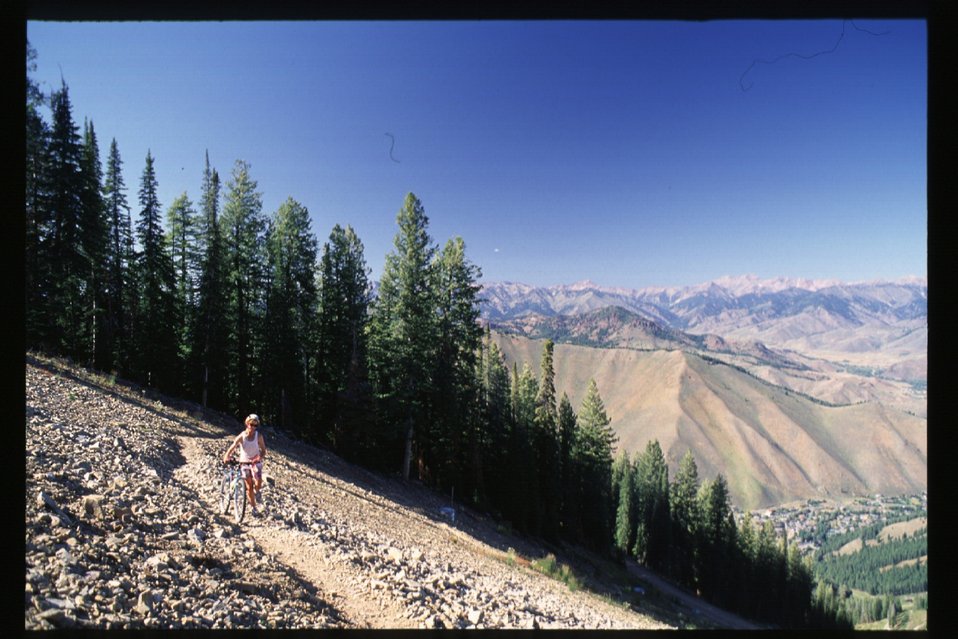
Recreation Scenic Biker Shoshone Field Office USRD Upper Snake River District